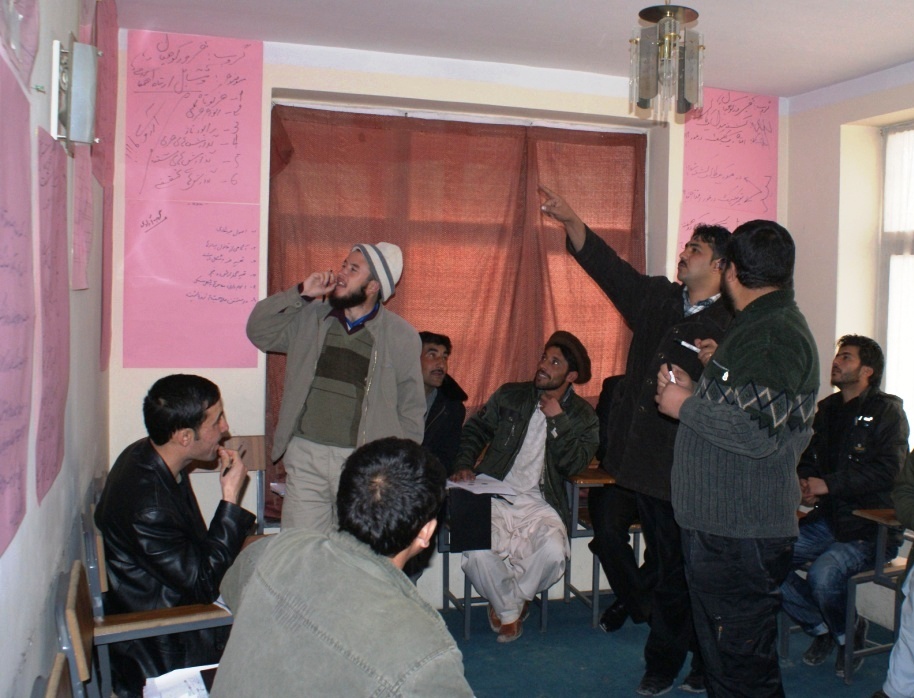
Nai Media Training